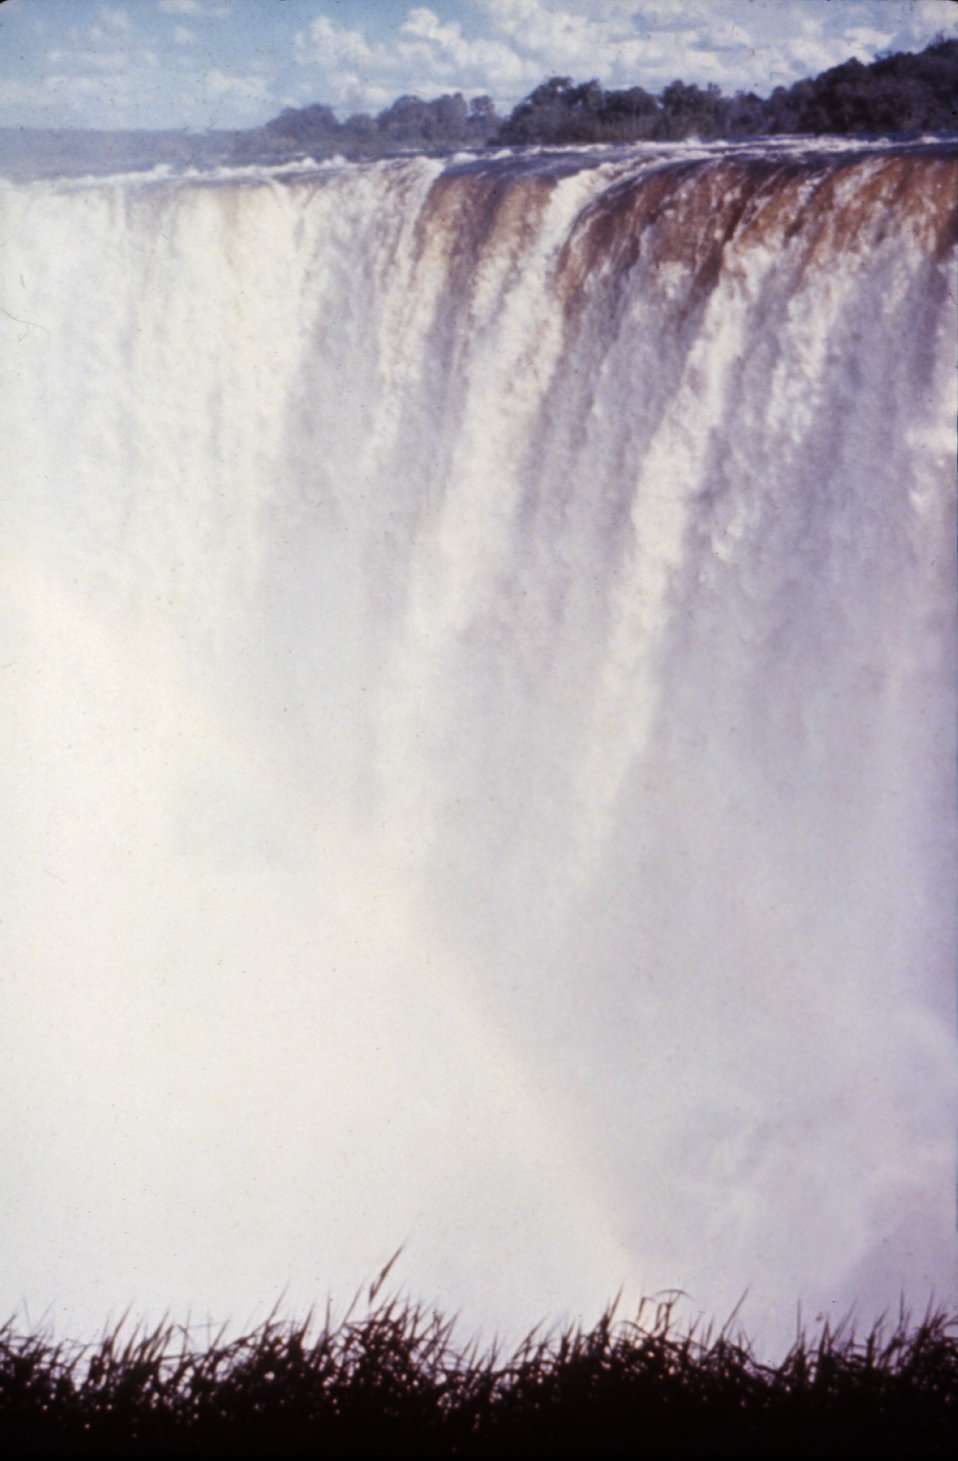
This Victoria Falls photo was taken during a visit to Rhodesia, now Zimbabwe, by 2 travelers later treated for Marburg disease.